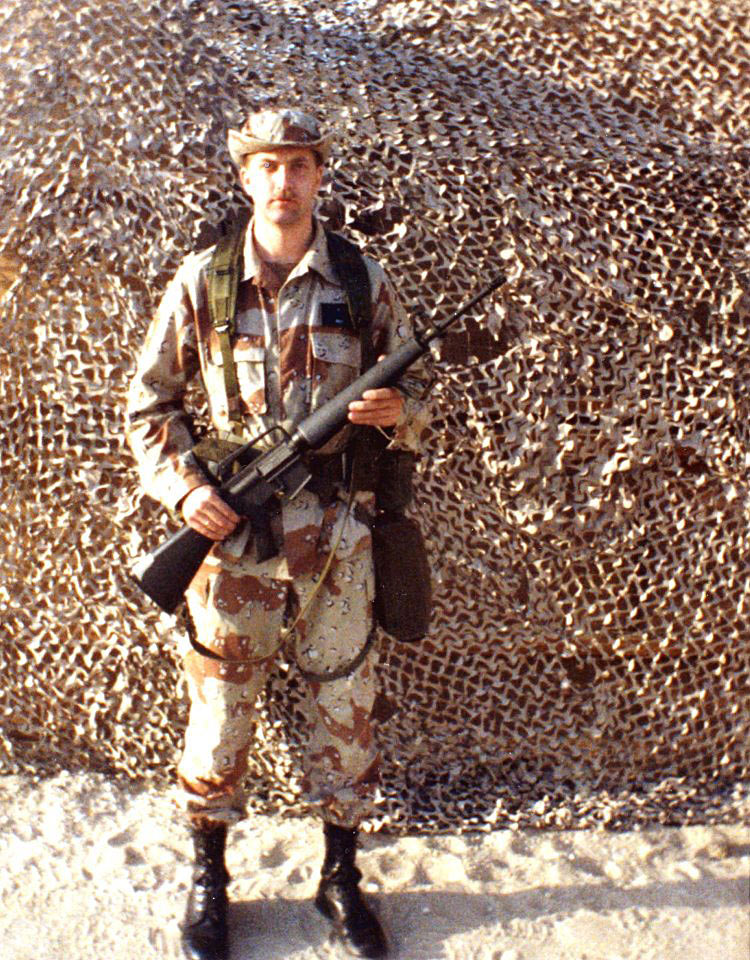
Anthony Wynn -- Pacific and Pacific Southwest Regions

Anthony Wynn is an Equal Employment Specialist with the Division of Diversity and Civil Rights serving the Pacific and Pacific Southwest Regions. He is a veteran of the United States Air Force, serving from 1981 to 1991 in Louisiana, Texas, and with the North Atlantic Treaty Organization (NATO) in Belgium. He was deployed with the 23rd Tactical Fighter Wing to Operation Desert Storm in Saudi Arabia during the first Gulf War. He also served with the 939th Rescue Wing, U.S. Air Force Reserve, based in Portland, Oregon, from 1993 to 1999. Anthony also serves as the Lesbian, Gay, Bisexual, and Transgender (LGBT) Special Emphasis Program Manager for both Regions.